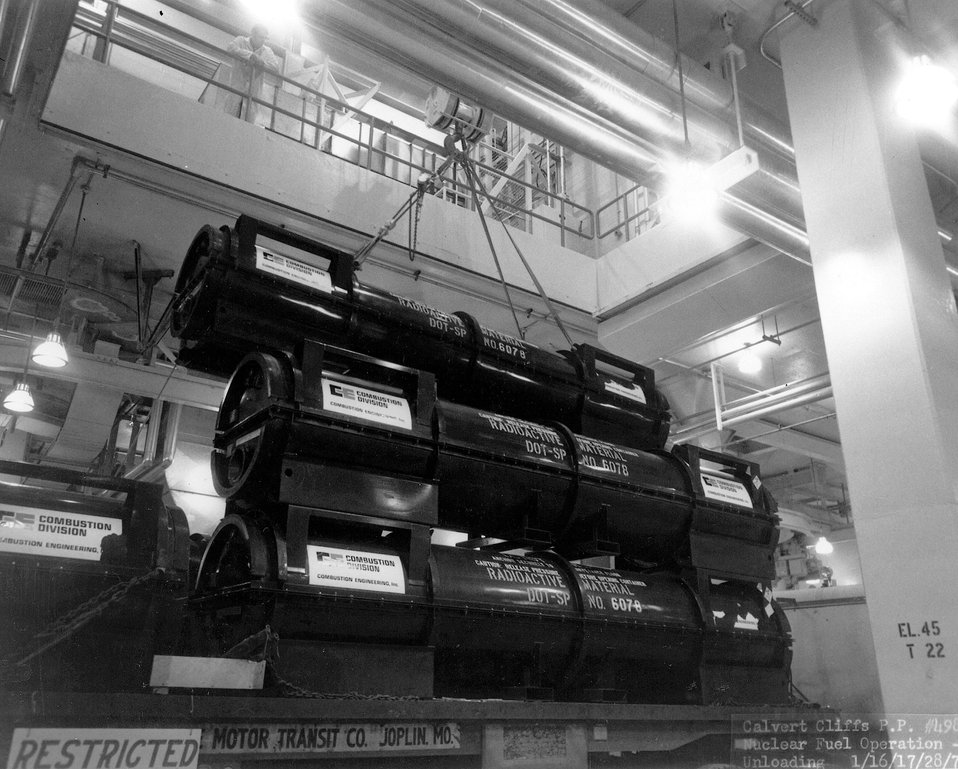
Unloading of nuclear fuel early in 1974 at the Baltimore Gas and Electric Company's Calvert Cliffs Nuclear Power Plant near Lusby, Md., on the Chesapeake Bay. Circa 1974.